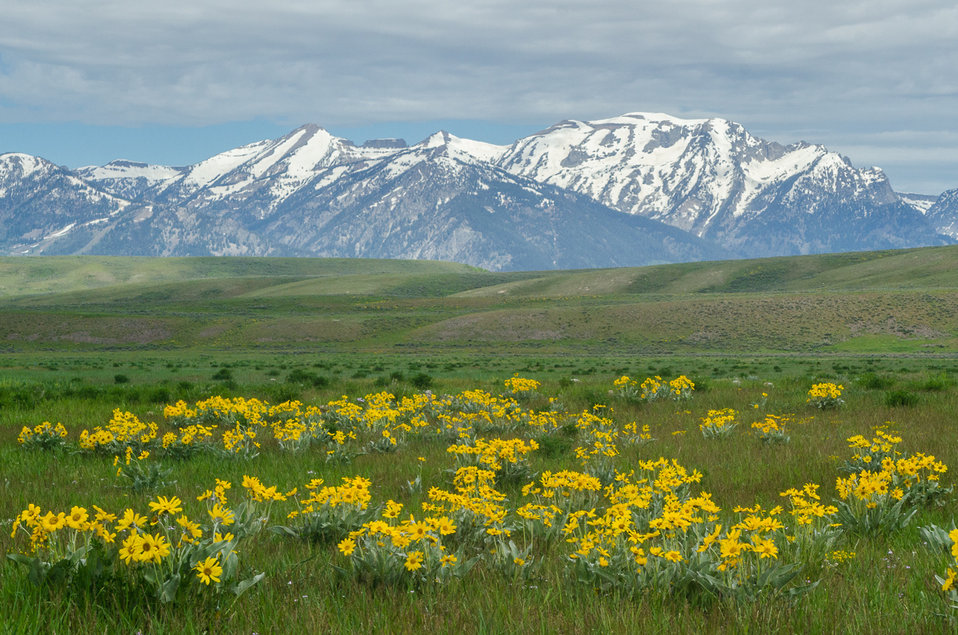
Fields of Gold

Arrowleaf balsamroot blooms in June with the Teton Range in the background.

Credit: USFWS / Barbara Hayton, National Elk Refuge volunteer